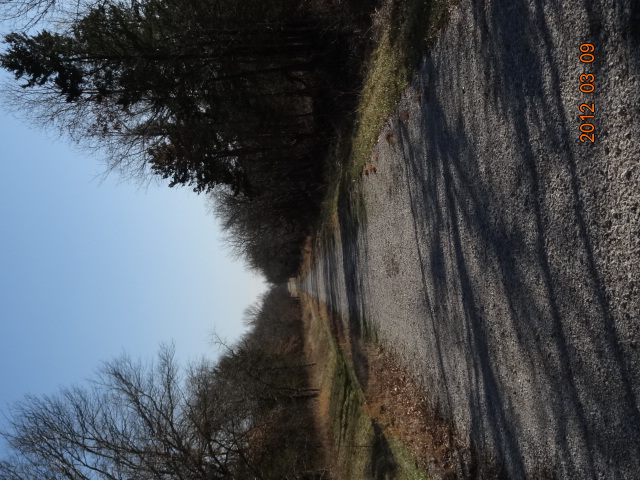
Carpenter Road Trail